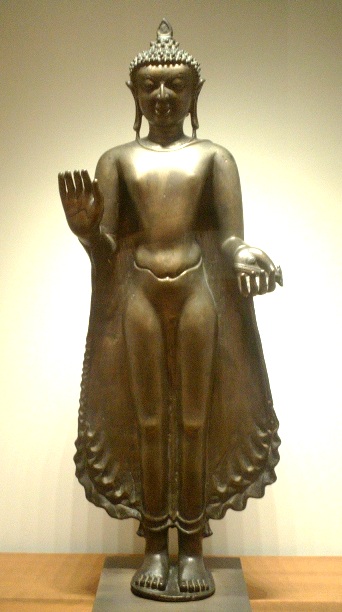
Pagan Buddha, 12th century. Musee Guimet, Paris. Personal photograph, 2004.